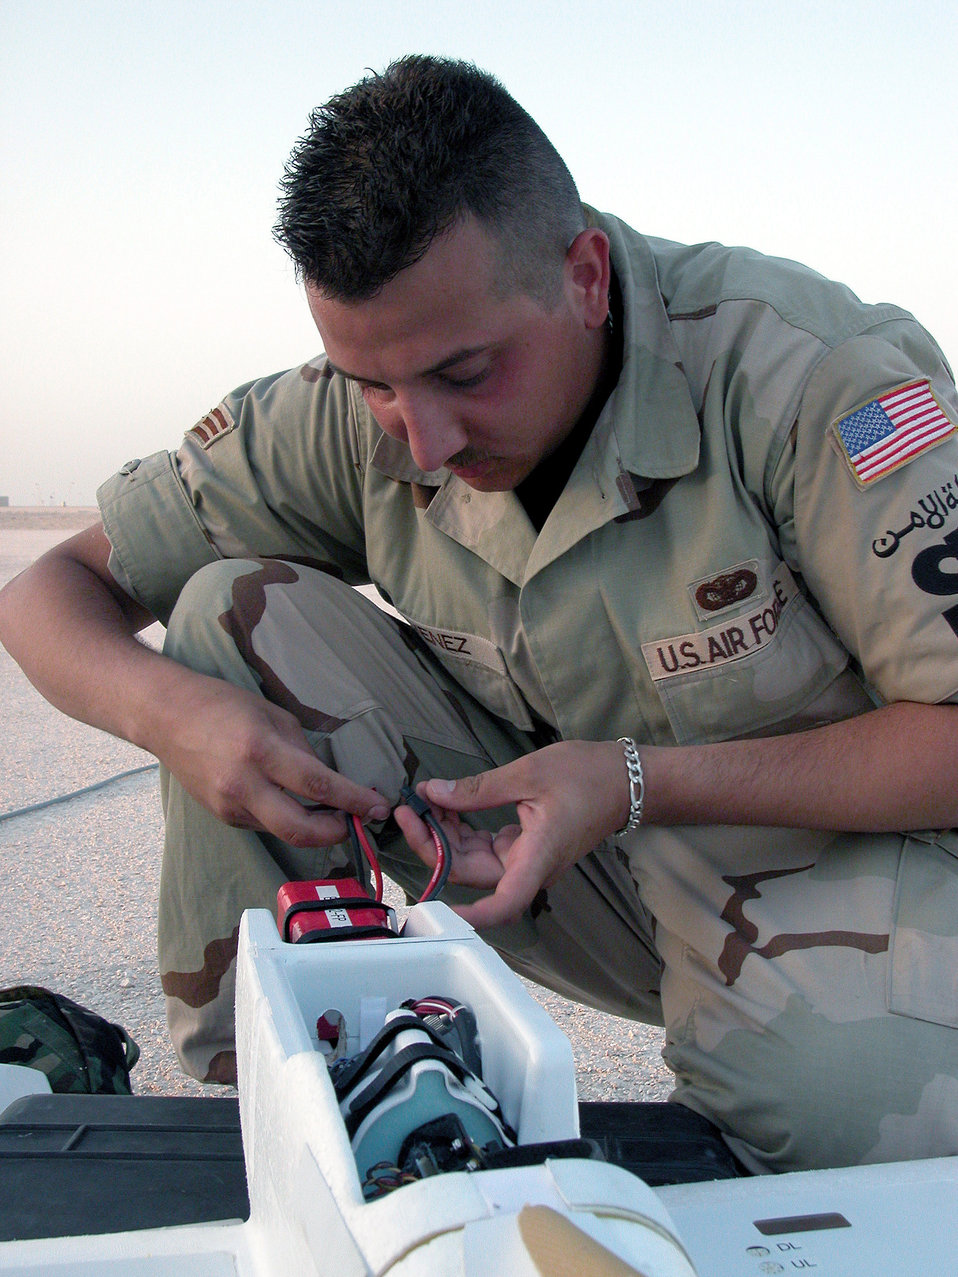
Desert Hawk gives security forces an eye in sky

SOUTHWEST ASIA -- Senior Airman Alexander Jimenez changes the battery in a Desert Hawk unmanned aerial vehicle. He is assigned to the 379th Security Forces Squadron's airborne surveillance program and is deployed from Spangdahlem Air Base, Germany.